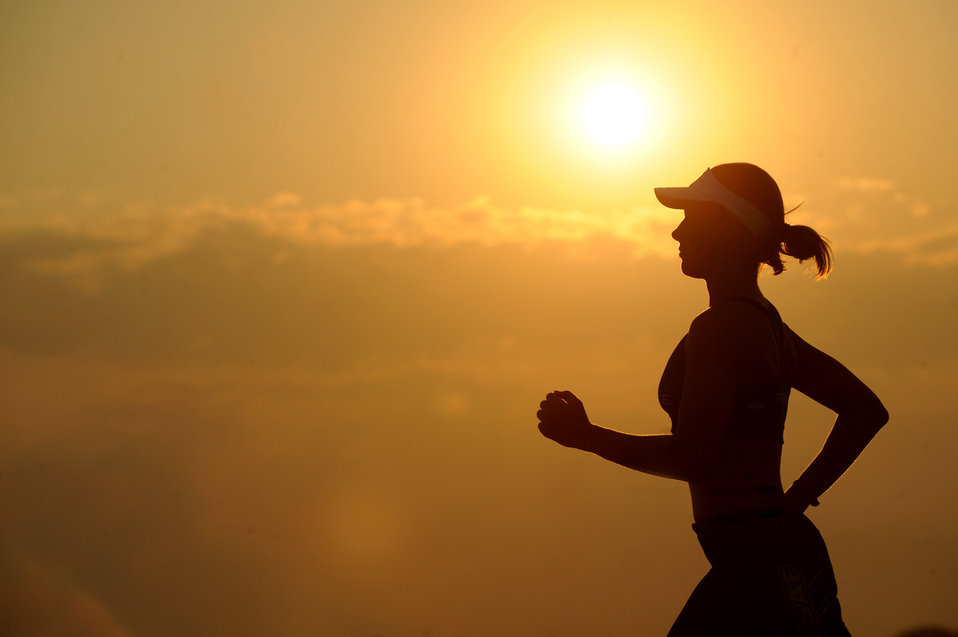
Solitary training

Capt. Jamie Turner runs in preparation for the Ironman World Championship at Joint Base Charleston, S.C., Sept. 21, 2010. Captain Turner is training to swim 2.4-miles through ocean waves, bike 112 miles and run a 26.2-mile marathon through challenging lava-covered terrain. She is a pilot with the 315th Airlift Wing.